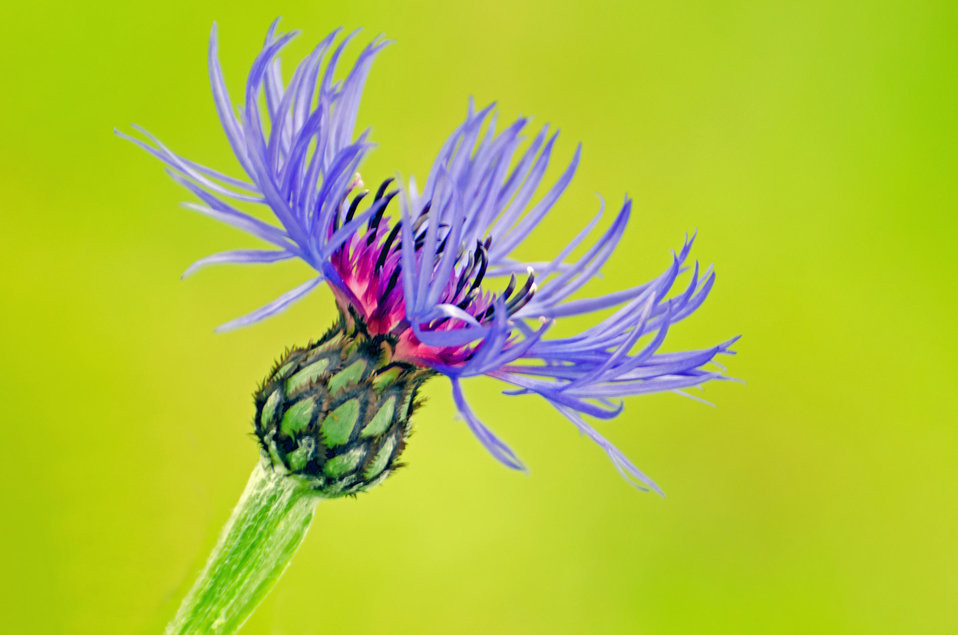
Flower

Beautiful flower - macro.